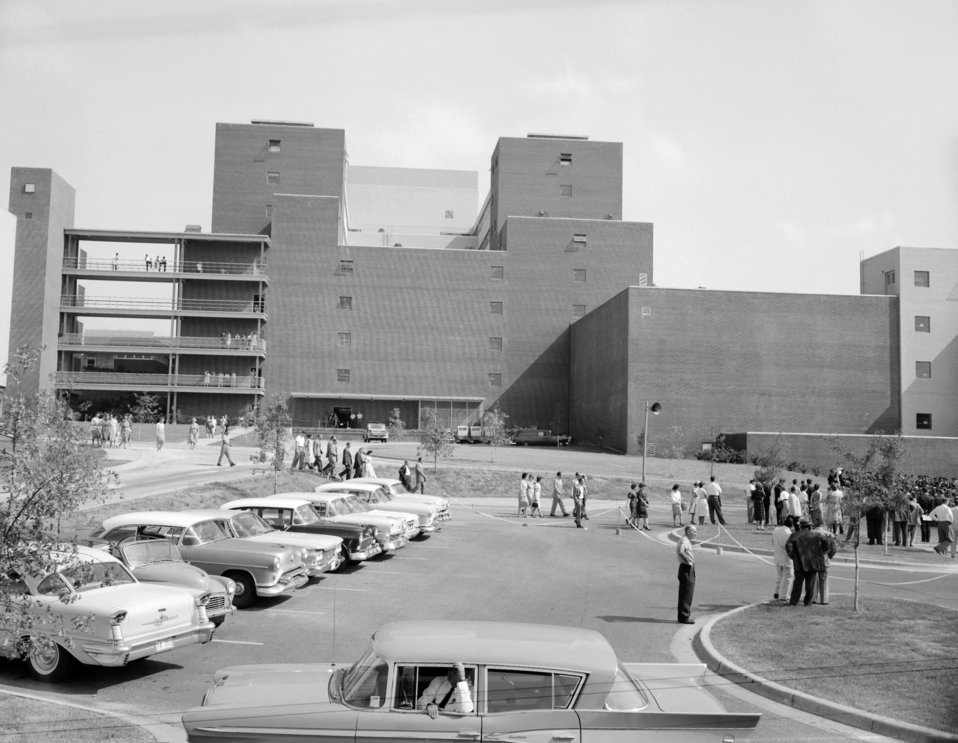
The 1960 CDC Dedication Ceremony facing the rear of Bldg. 1.